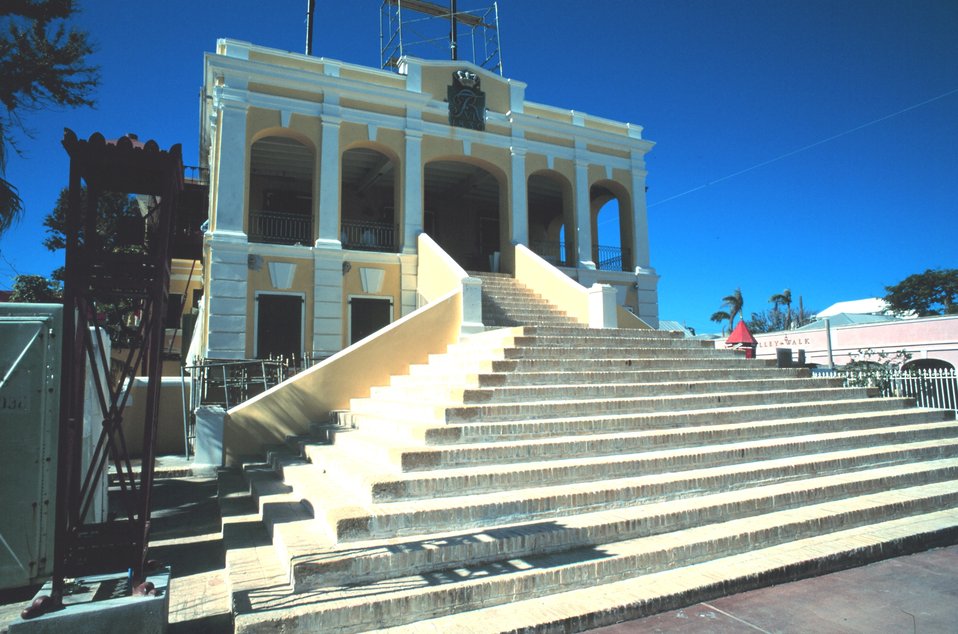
The Government House at Christiansted, under repair from hurricane damage.